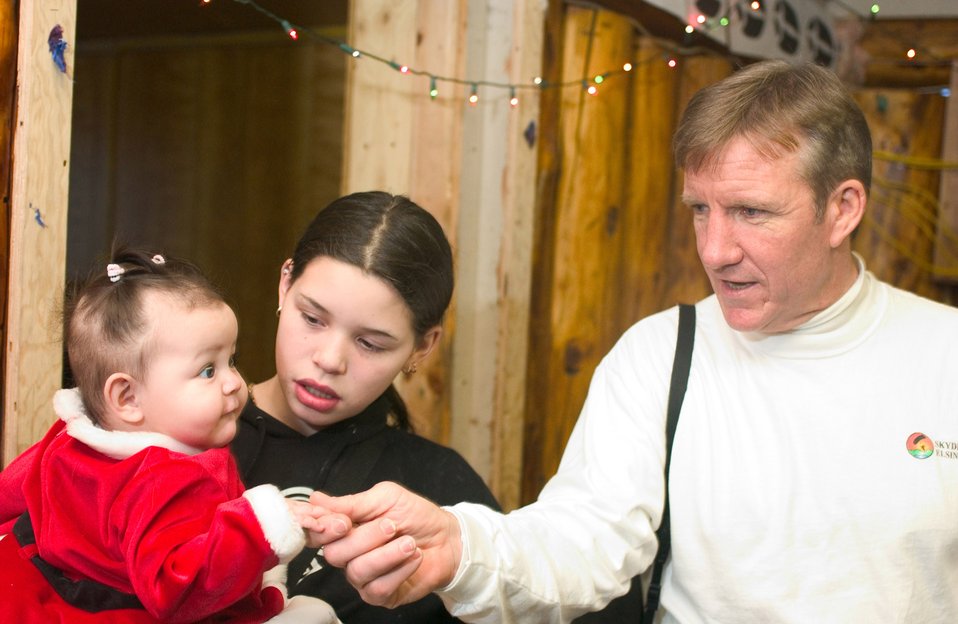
Airmen bring holidays to remote village

ARCTIC VILLAGE, Alaska (AFPN) -- Brig. Gen. Hawk Carlisle greets Olivia Hollarath, and her sister, Brittany, during a traditional visit between Airmen from Elmendorf Air Force Base, Alaska and the Athabascan Indians of Arctic Village, Alaska.